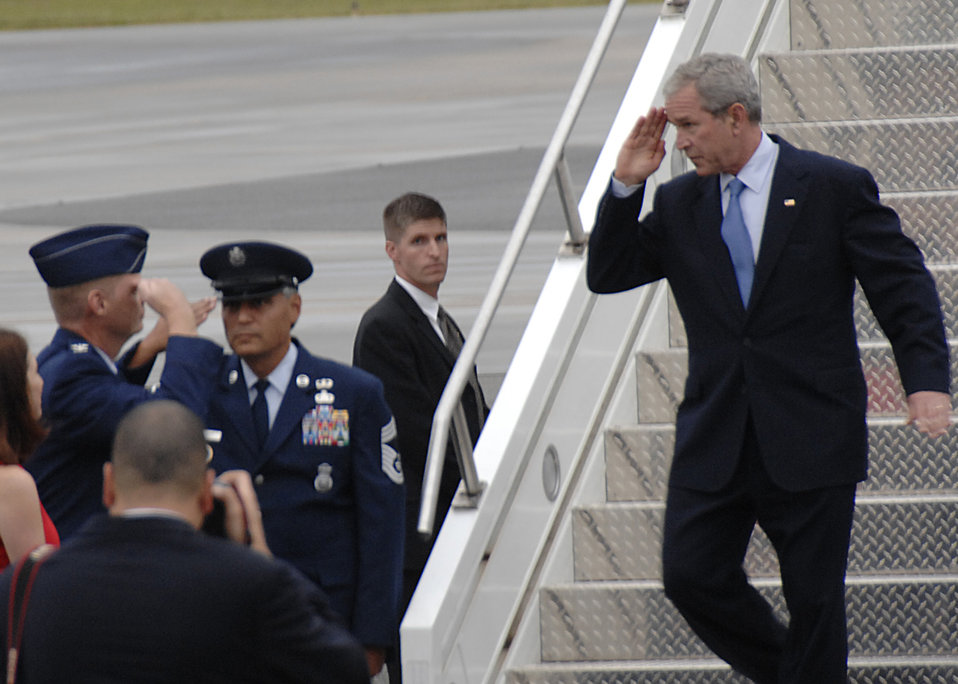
President meets with Airmen, families during S.C. visit

President George Bush salutes Col. John Millander on the Charleston Air Force Base, S.C., flightline Oct. 10. President Bush met with more than 250 Team Charleston members en route to an event at Kiawah Island, S.C. Colonel Millander is the 437th Airlift Wing commander.